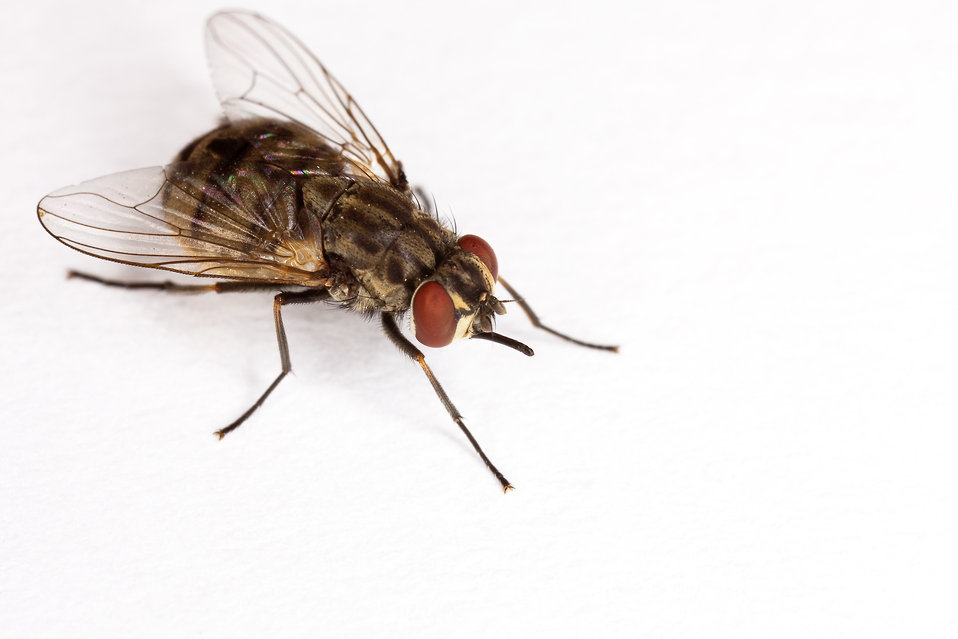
This is a photograph of the adult stable fly (Stomoxys calcitrans) taken on May 23, 2012. This fly is one of many biting, blood-feeding insects.